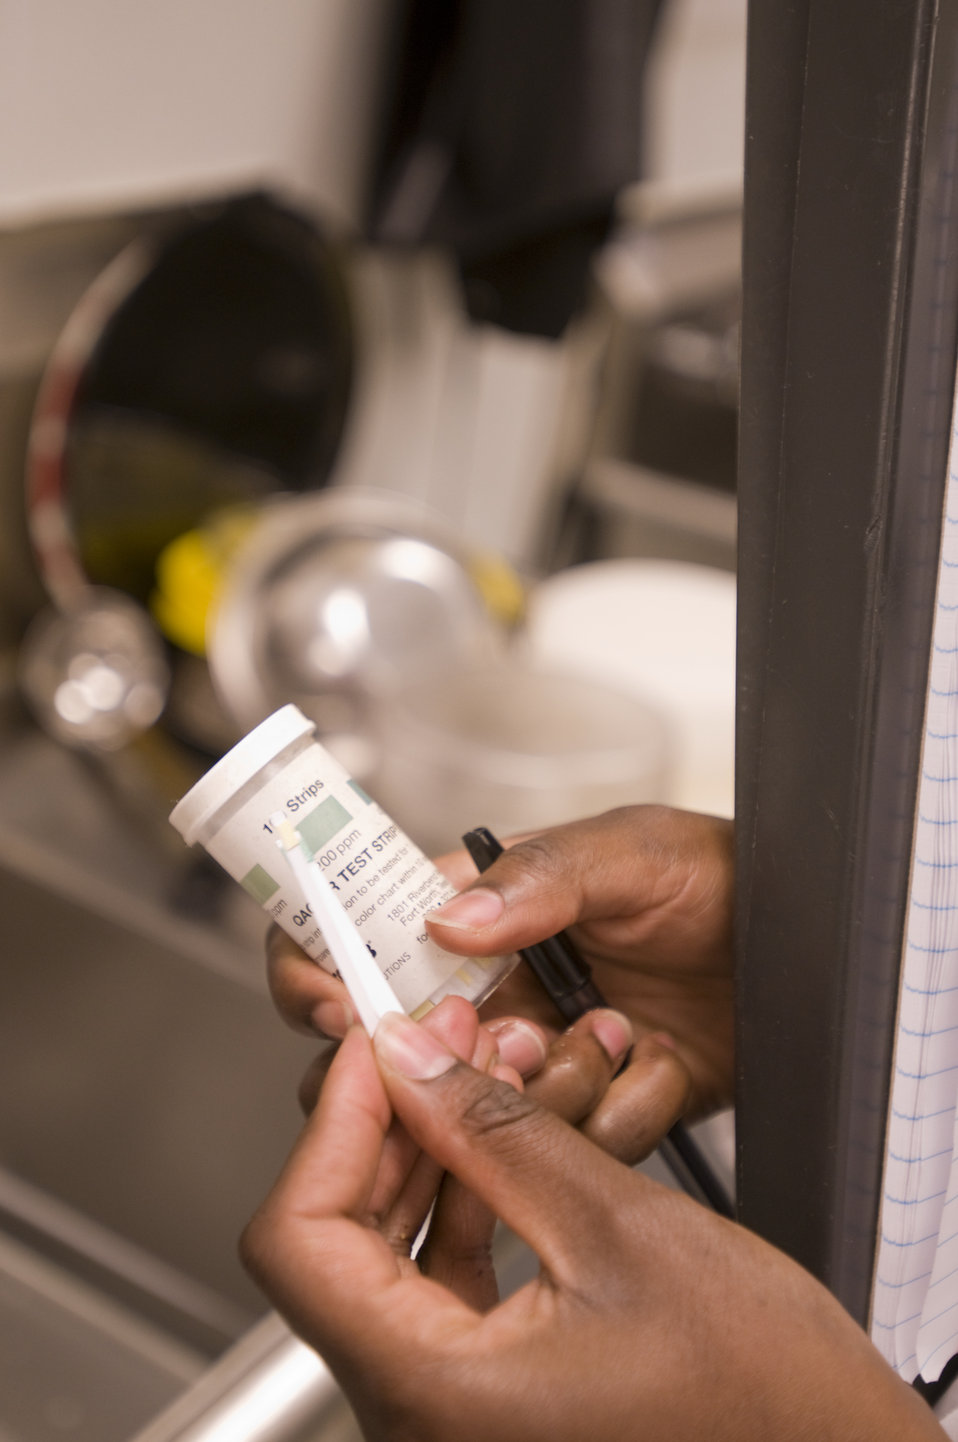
Inside a kitchen undergoing a scheduled inspection, this state-appointed health inspector was about to test the concentration of this kitchen's quaternary ammonium chloride (QAC) disinfectant. In her right hand was a bottle containing an unknown number of QAC CR test strips, in her left was a single stip.